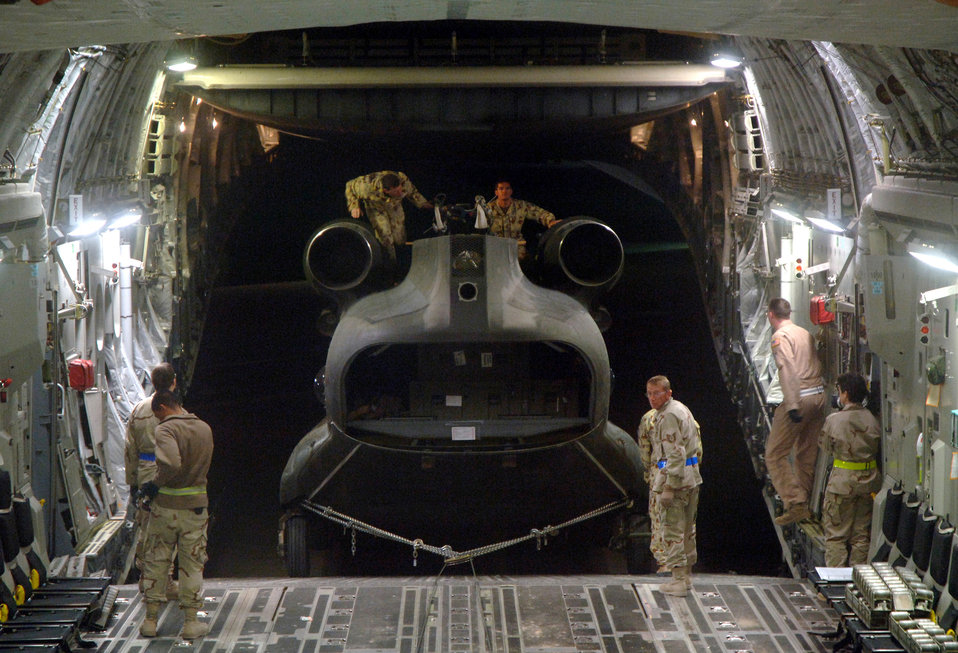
C-17 cargo load

Crewmembers from the 817th Expeditionary Airlift Squadron and their Australian forces counterparts upload an Australian Army CH-47 helicopter onto a C-17 Globemaster III at a deployed location in Southwest Asia on Sunday, Mar. 12, 2006. The C-17 is from McChord Air Force Base, Wash.